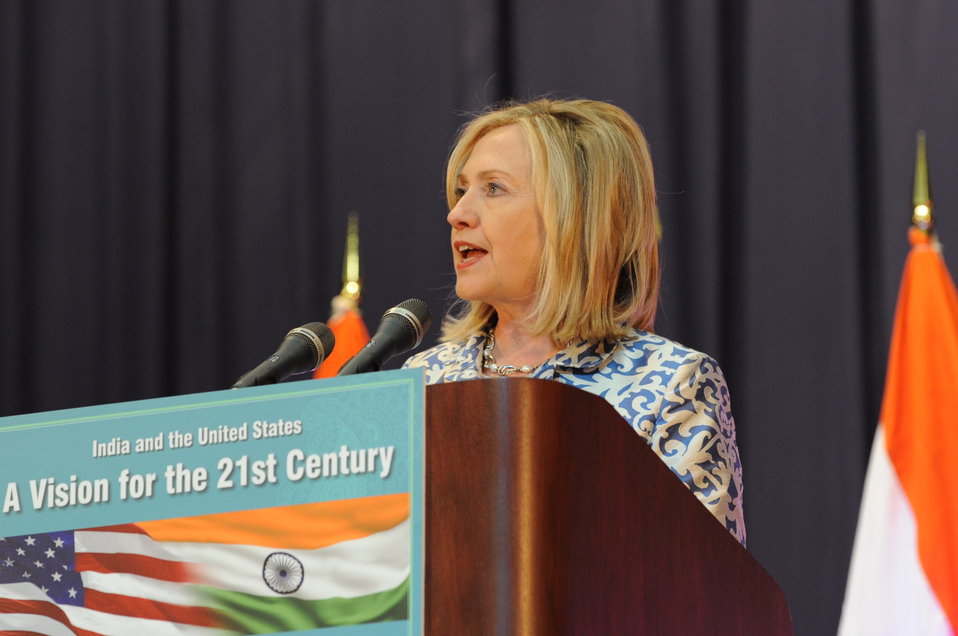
Secretary Clinton Delivers Remarks on “India and the United States: A Vision for the 21st Century”

U.S. Secretary of State Hillary Rodham Clinton delivers remarks on “India and the United States: A Vision for the 21st Century,” at Anna Centenary Library in Chennai, India, on July 20, 2011. [Paul Cohn/ State Department photo]